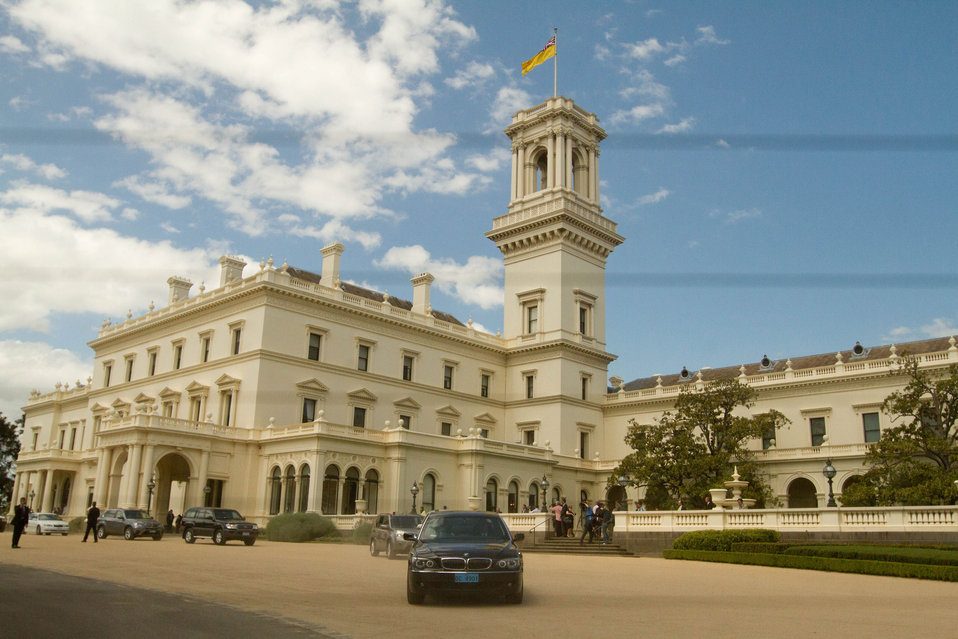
Secretary Clinton Leaves the Government House in Melbourne

U.S. Secretary of State Hillary Rodham Clinton leaves the Government House in Melbourne, Australia, on November 8, 2010.